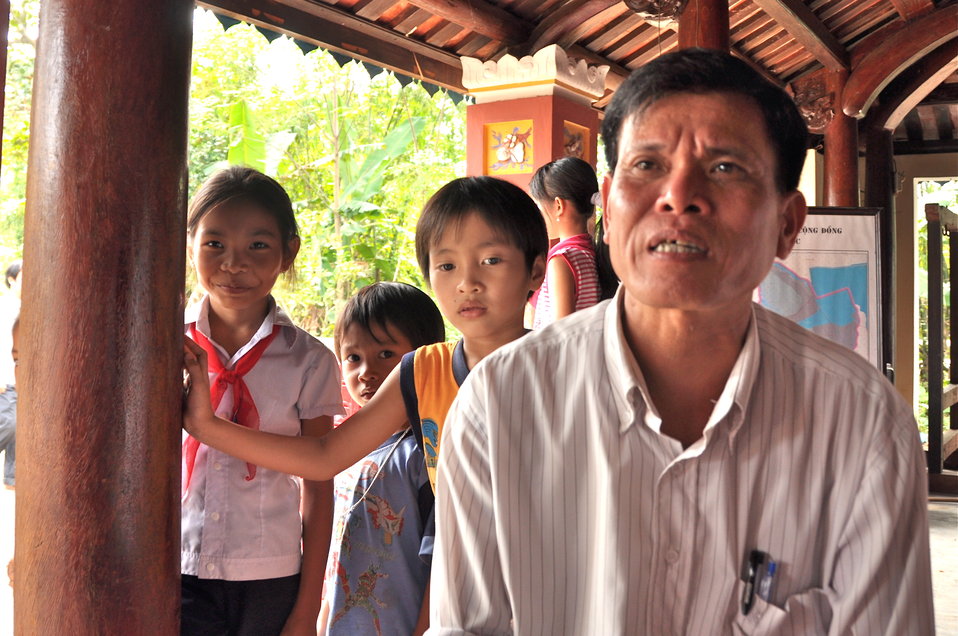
USAID and Save the Children support community evacuation drill and emergency preparedness in central Vietnam

Loc An Commune, Phu Loc District, Thua Thien Hue Province
December 4, 2012, Photo: Richard Nyberg, @USAIDVietnam